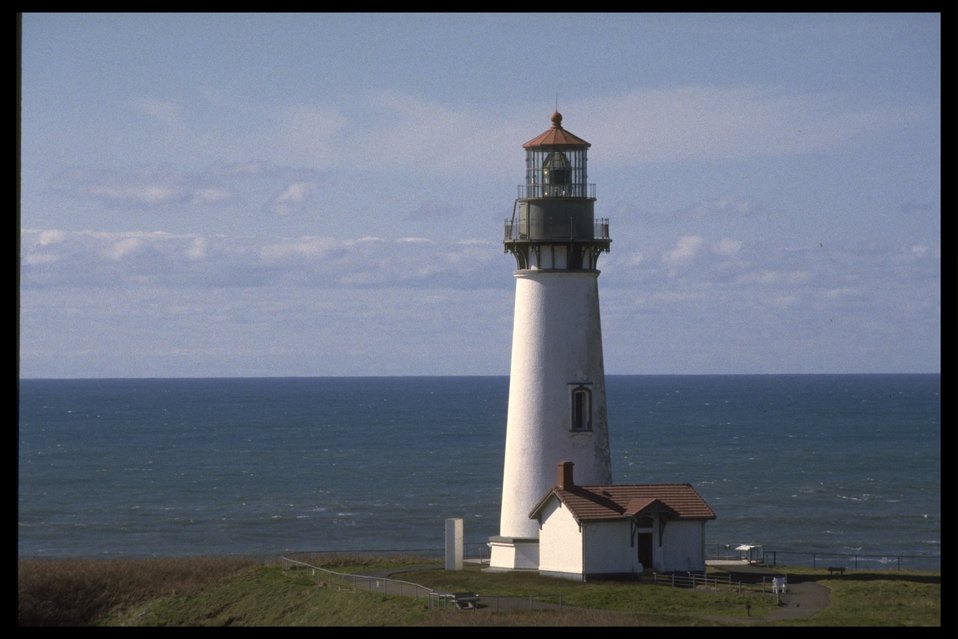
Yaquina Head Lighthouse.